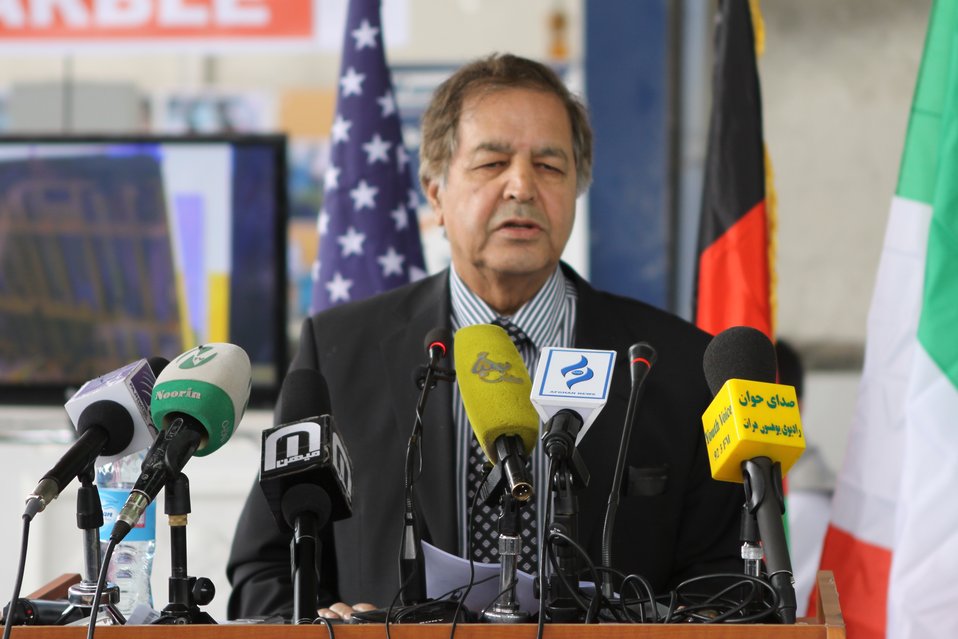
100525 Hirat Marble Conference 278